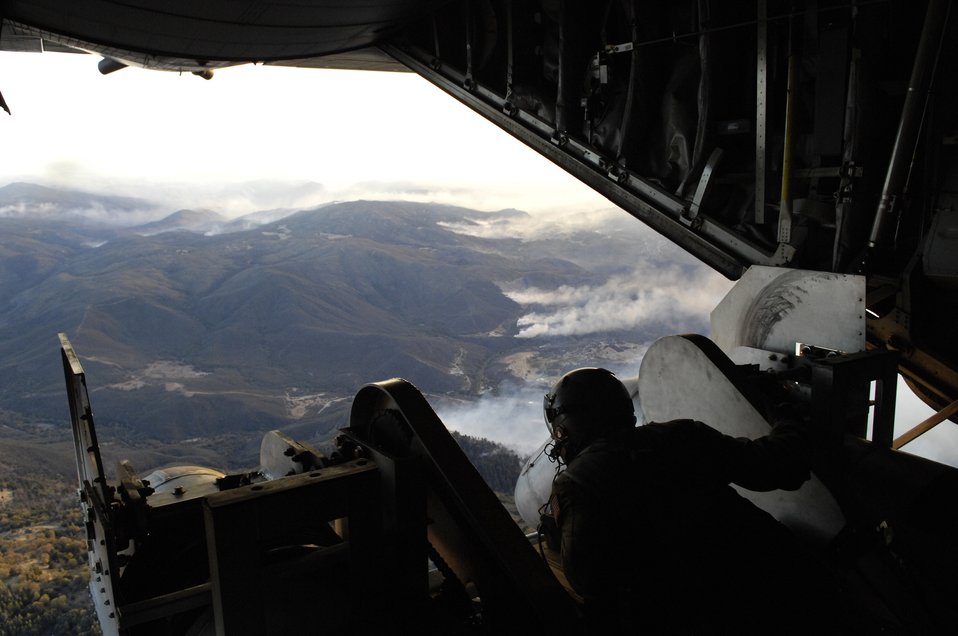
C-130s fight California wildfires

Tech. Sgt. Lamont Wood checks the positioning of the nozzles prior to deploying 3,000 gallons of fire retardant over the Poomacha fire Oct. 24 in North San Diego County, Calif. The C-130 Hercules and crew are assigned to the 302nd Airlift Wing from Peterson Air Force Base, Colo. The aircraft launched from Channel Islands Air National Guard Station, Calif. Air Force Reserve Command officials sent two of its designated firefighting C-130H3 aircraft to help battle the raging wildfires in Southern California.